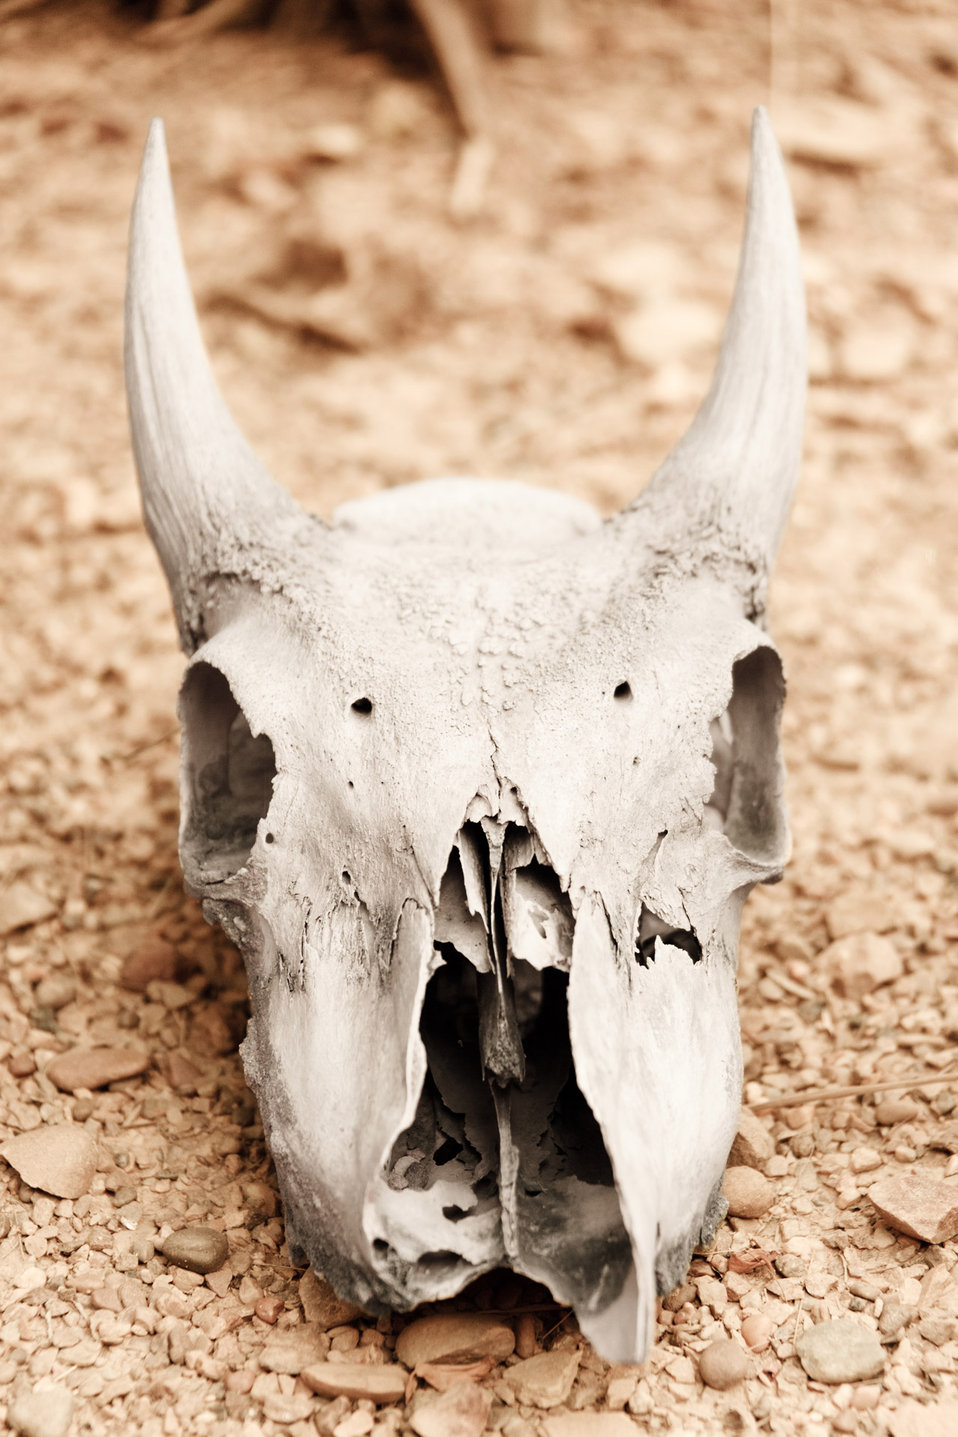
Animal skull in desert.